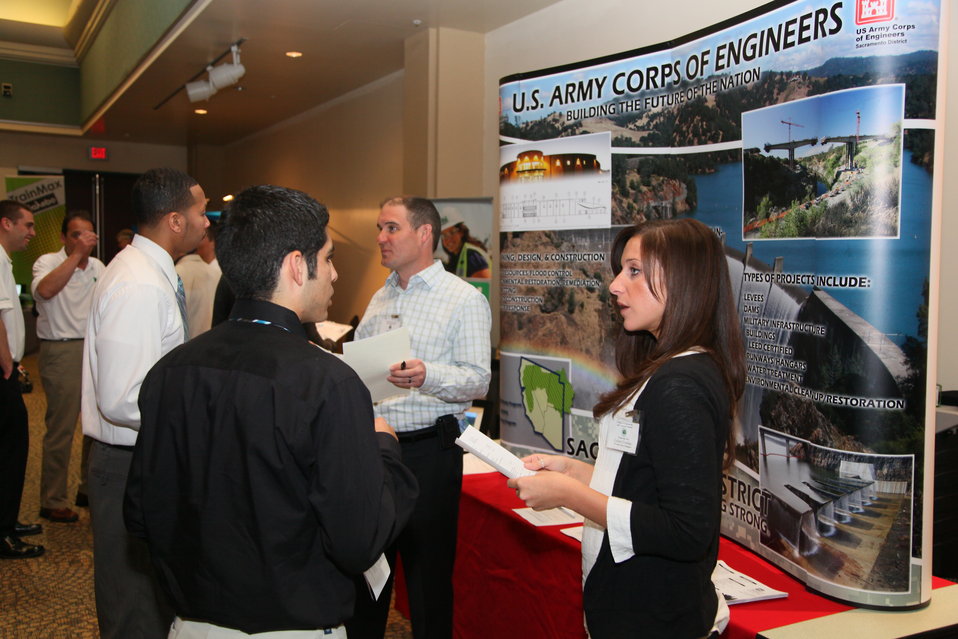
Engineers talk careers at Sac State

Colleen Donohue (right), a civil design intern with the U.S. Army Corps of Engineers Sacramento District, talks with a student about career opportunities in engineering at a California State University-Sacramento career fair in Sacramento, Calif., March 2, 2012. The event offered CSUS students the opportunity to connect with more than 70 employers in the fields of engineering and computer sciences.